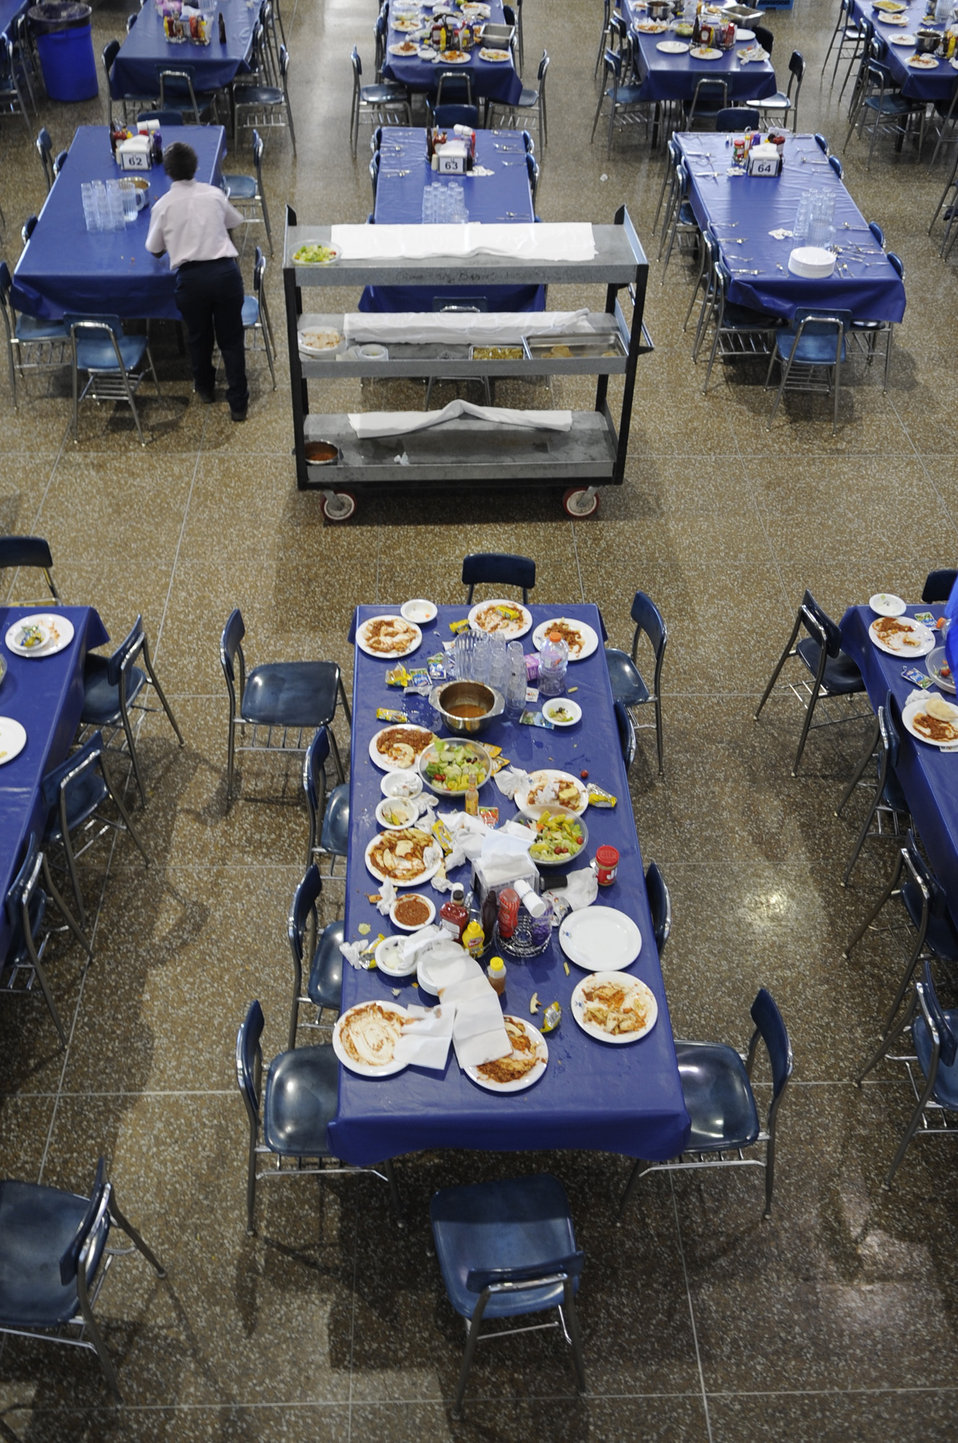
U.S.Air Force Academy Mitchell Hall Cadet Dining Facility

A worker clears off a table after lunch at the Mitchell Hall Cadet Dining Facility Jan. 23 at the U.S. Air Force Academy in Colorado Springs, Colo. The dining facility feeds approximately 4450 cadets and sits on 1.75 acres.